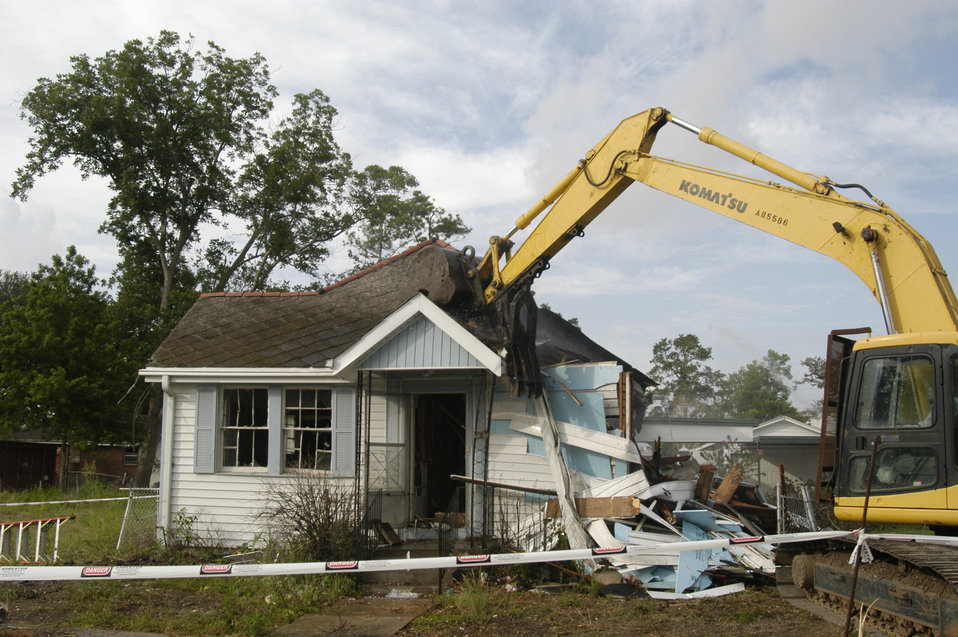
Many of the older homes and buildings in the New Orleans, LA, locale that were destroyed by Hurricane Katrina contained asbestos material (i.e. asbestos roofing tiles, transite siding, insulation, floor tiles, and popcorn ceilings). The U.S. Army Corps of Engineers (USACE) was mandated to follow strict environmental protocols in the demolition of these homes that were designated Regulated Asbestos Containing Material (RACM) demolitions. This home was being torn down to enable the owner to rebuild.